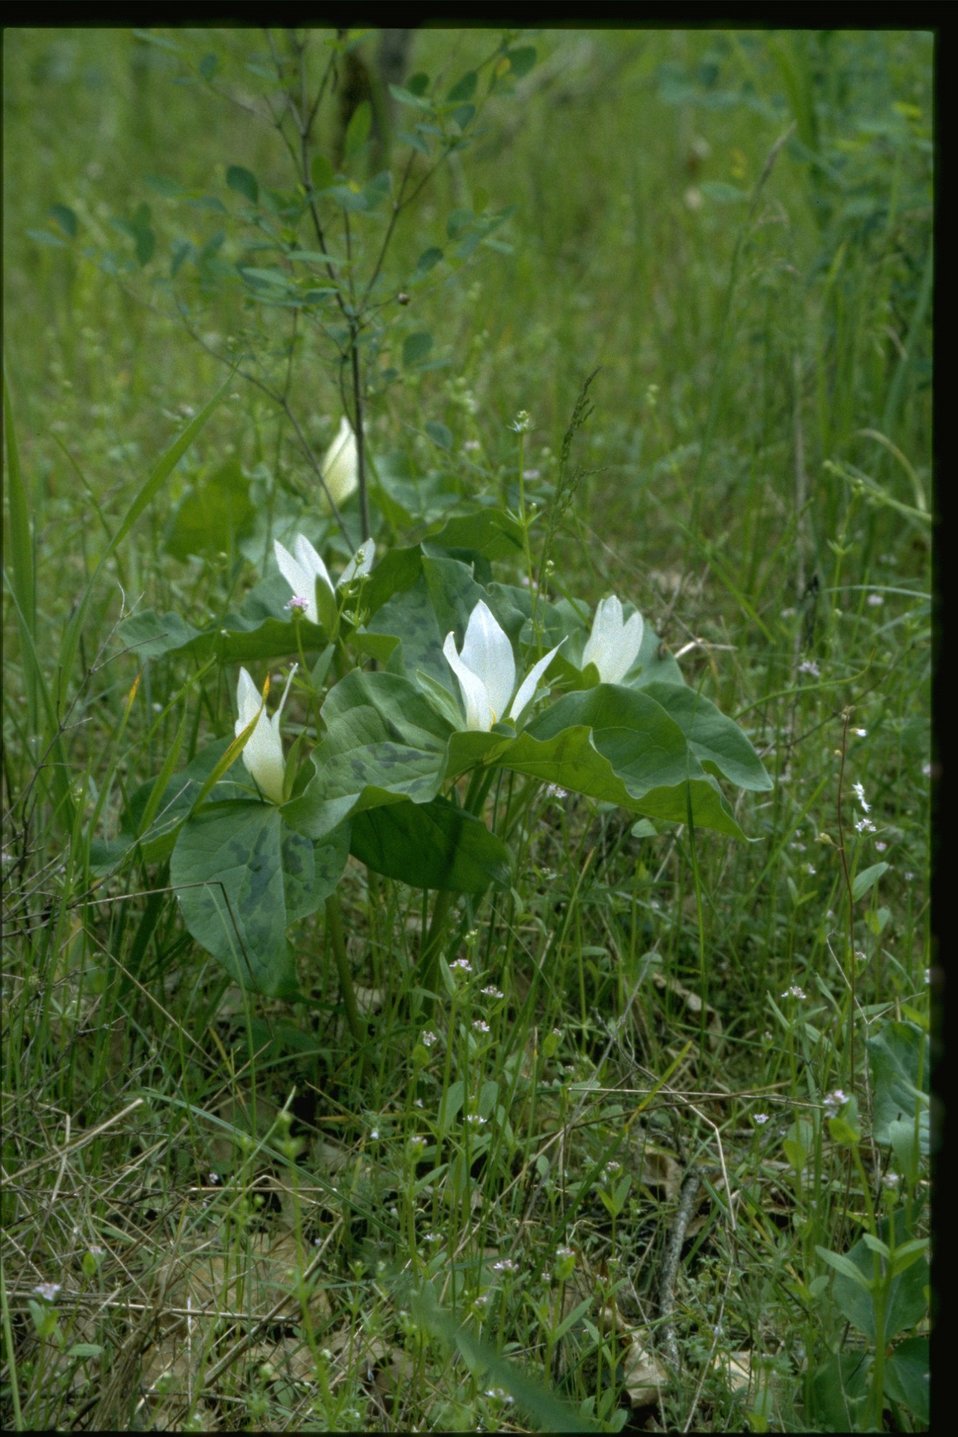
Medium shot of Trillium albidum.